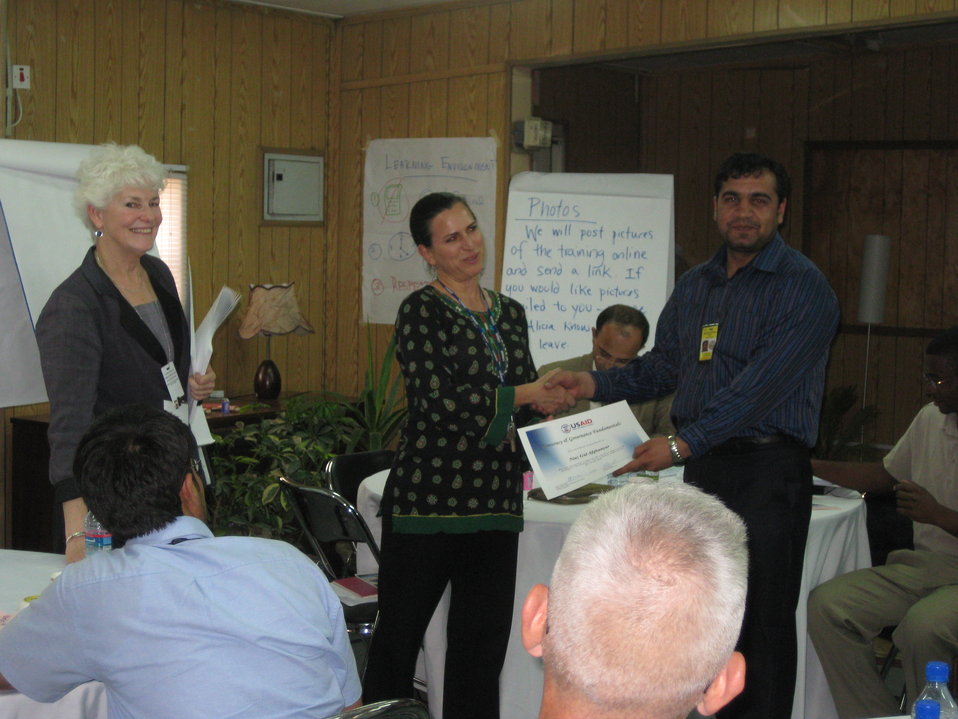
Afghan Youth Voices 052